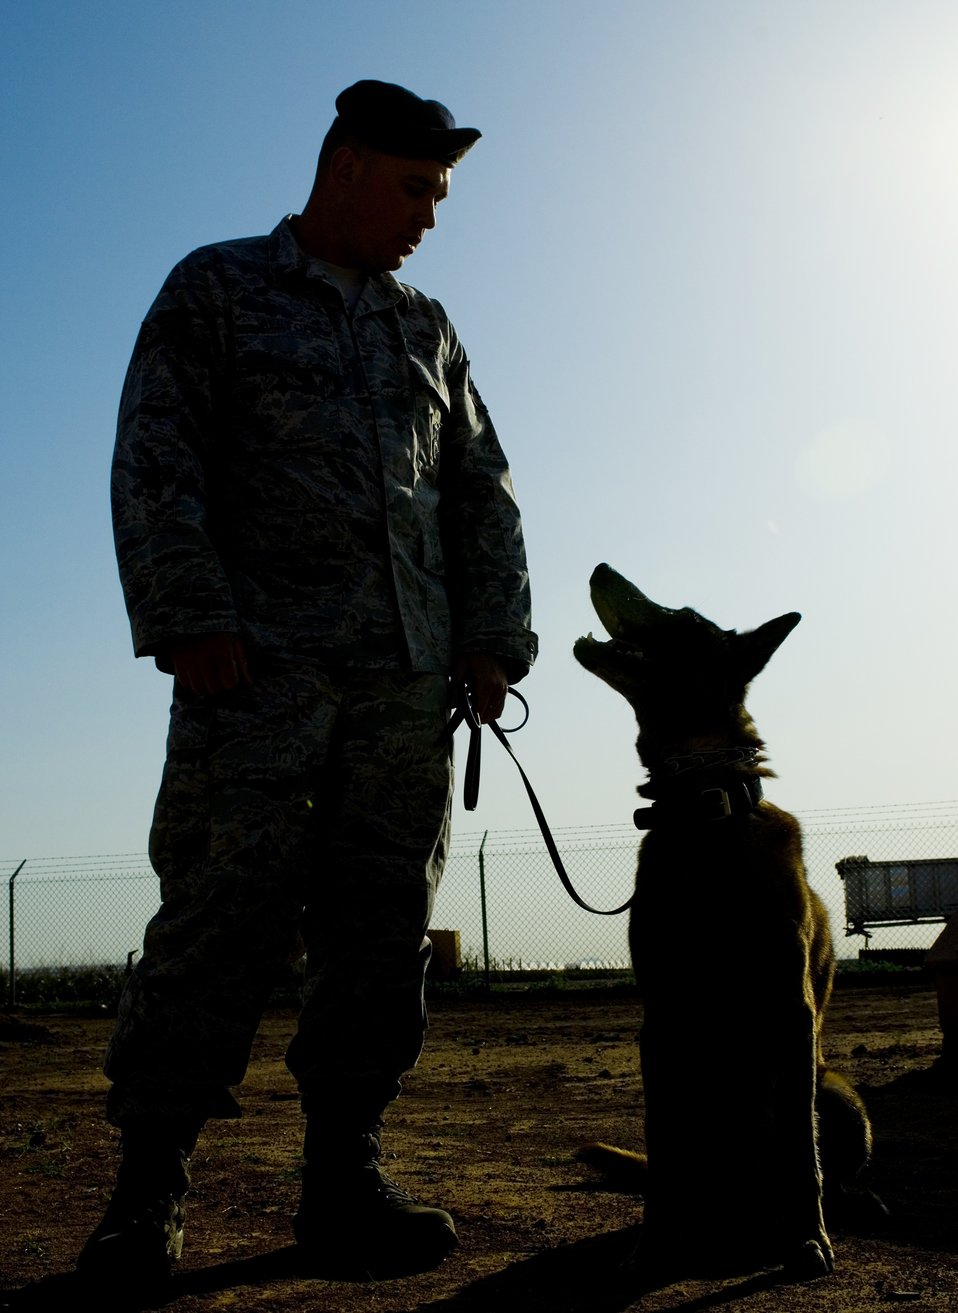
Working dogs take final run

Staff Sgt. Kyle Alltop works obedience with Roc during his final run of the obstacle course at the Military Working Dog kennels at Luke Air Force Base, Ariz., March 25, 2010. Roc is due to be medically retired April 6, due to osteoarthritis, or bone loss in the joints and surrounding bones. Sergeant Alltop is a military working dog handler with the 56th security Forces.